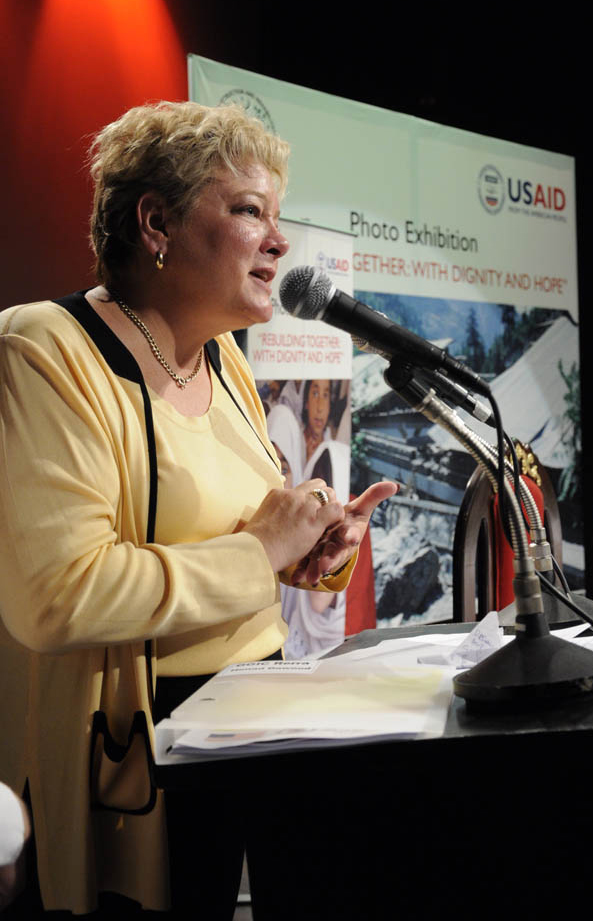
Photography and Drawing Exhibition on Pakistan 2005 Earthquake “Rebuilding Together: With Dignity and Hope”

Karen Freeman, USAID Deputy Director for Pakistan, speaking to the winners of a drawing contest organized by USAID. USAID organized a photo exhibition “Rebuilding Together: With Dignity and Hope” at Pakistan National Council of Arts (PNCA) in Islamabad.